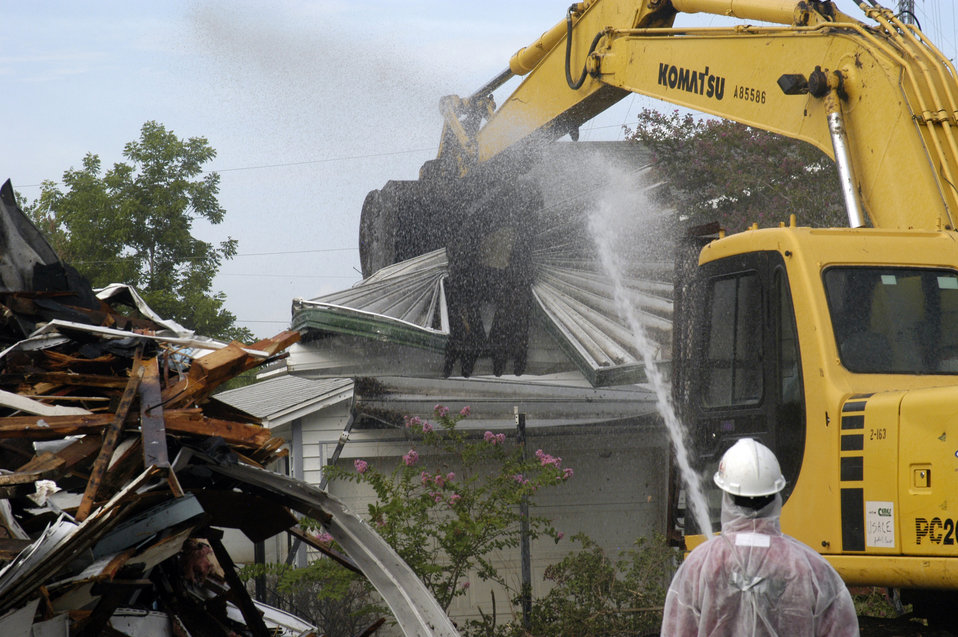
Many of the older homes and buildings in the New Orleans, LA, locale that were destroyed by Hurricane Katrina contained asbestos material (i.e. asbestos roofing tiles, transite siding, insulation, floor tiles, and popcorn ceilings). The U.S. Army Corps of Engineers (USACE) was mandated to follow strict environmental protocols in the demolition of these homes that were designated Regulated Asbestos Containing Material (RACM) demolitions. Prior to and during the demolition of the RACM house, water was constantly sprayed onto the building to prevent the asbestos containing material from becoming “friable” (airborne).